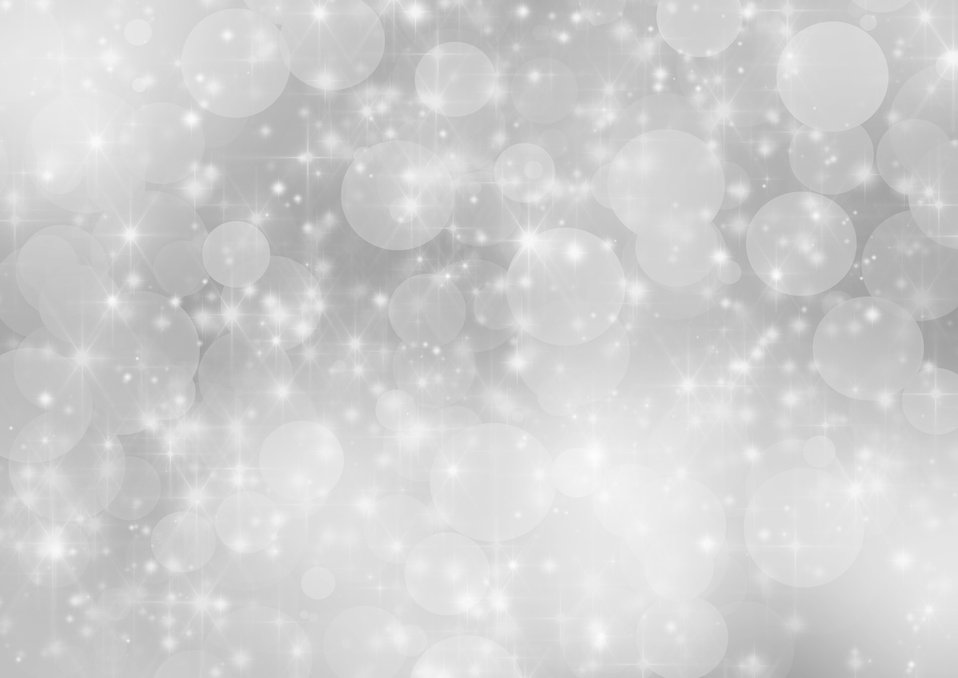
Silver christmas background

Silver christmas bokeh and stars background.